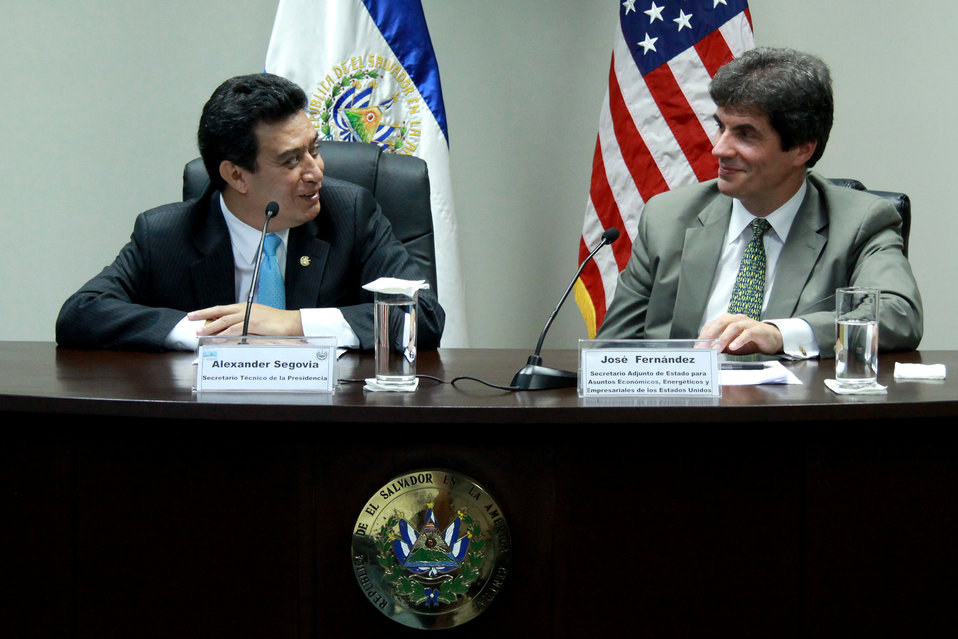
Assistant Secretary Fernandez and Salvadoran Technical Secretary Segovia Speak With Reporters

Assistant Secretary of State for Economic, Energy and Business Affairs Jose Fernandez and Salvadoran Technical Secretary Alexander Segovia speak with the reporters about advances made on negotiations toward an action plan for the Partnership for Growth initiative in San Salvador, El Salvador on August 11, 2011.